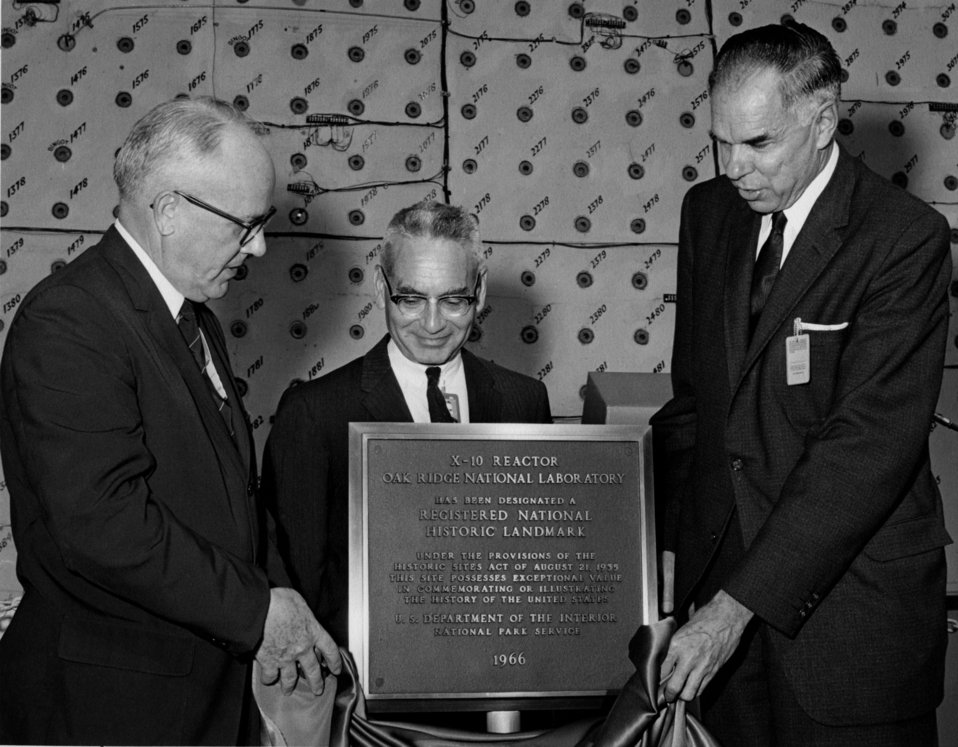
X-10 Graphite Reactor Dedicated as National Historic Landmark Oak Ridge

66-281-8 DOE photo Ed Westcott 9-13-1966 ORNL Oak Ridge Tennessee